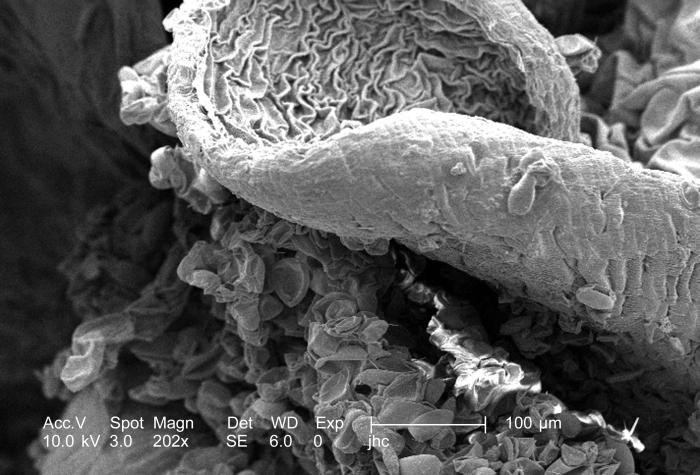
Magnified 202x, this scanning electron micrograph (SEM) revealed some of the morphologic ultrastructure found on the petal of an unidentified specie of "spiderwort" flower, Tradescantia sp.. In the background on the left, the centrally located stigma is visible. It is unto the stigma that the pollen is to land in order to pollinate the flower. The spiderwort's sap is very viscous, and when touched between the fingertips, the sap will stretch, much like the strands of a spider's silky web, hence the name, spiderwort.